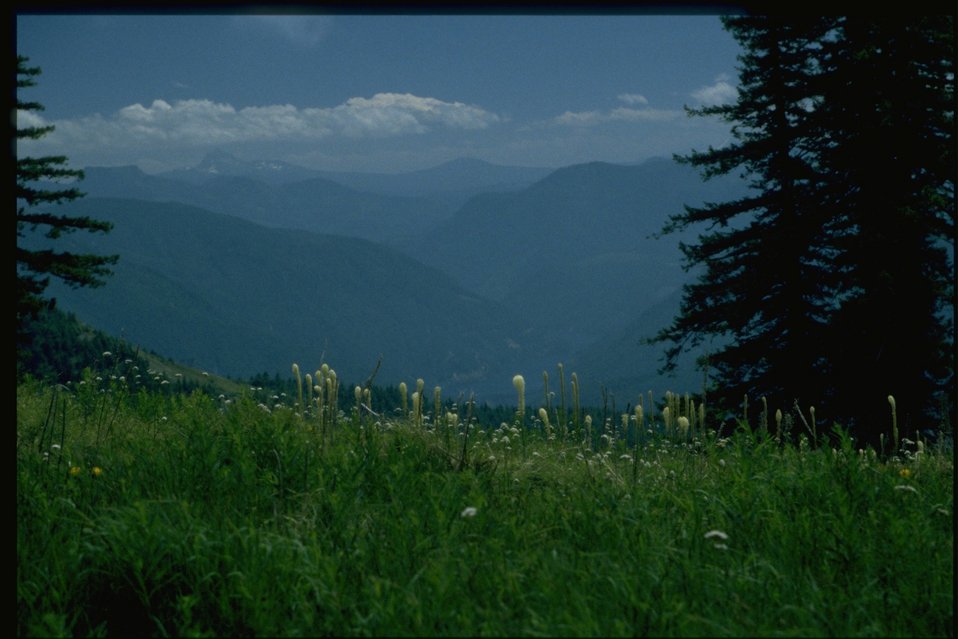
Scenic view from Mt. Horeb.